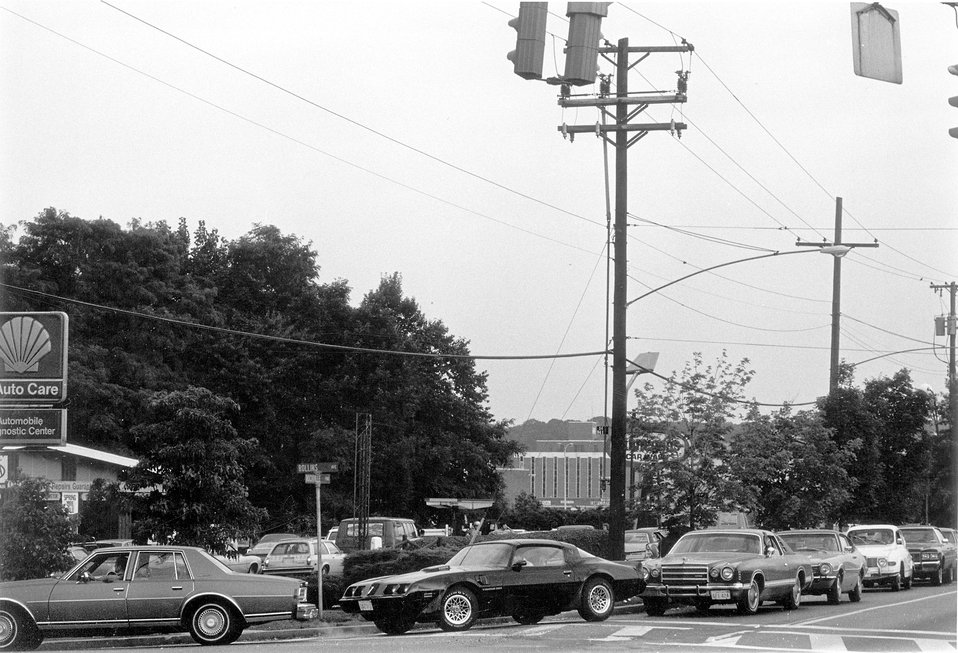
Gasoline lines stretch as far as the eye could see early June 16, 1979 along Rockville Pike, MD.